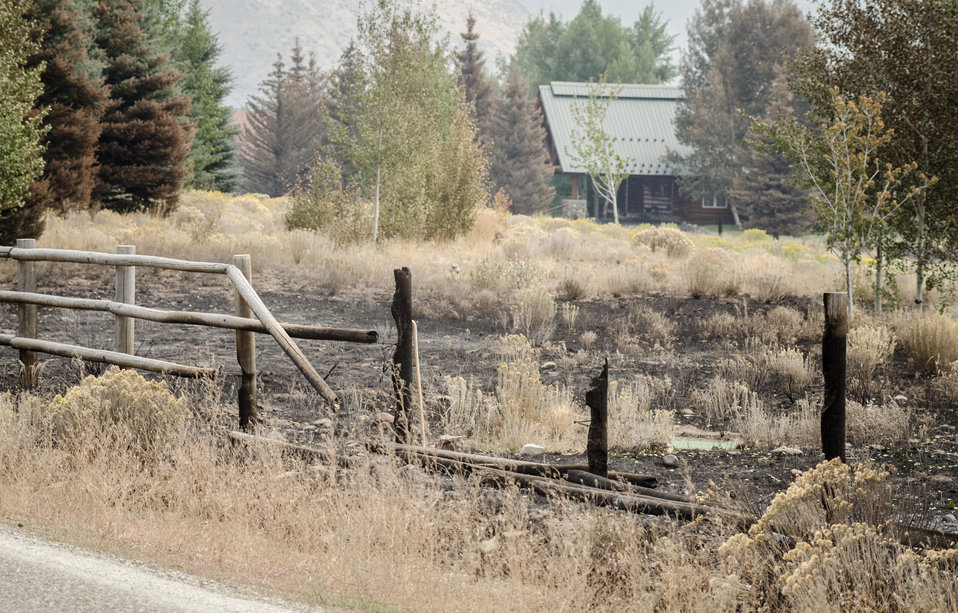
Thanks to the efforts of Wildland Firefighters, support crews and other first responders, homes and residential communities were (with few exception) saved from major damage, from the Beaver Creek Fire, near Hailey, ID, in the interface of U.S. Department of Agriculture (USDA) Forest Service (FS) and Sawtooth National Forest and Bureau of Land Management (BLM) lands, on Wednesday, Aug 21, 2013. In this community, major sections of hillside were charred, some suffered burnt trees, grass lands and fences.